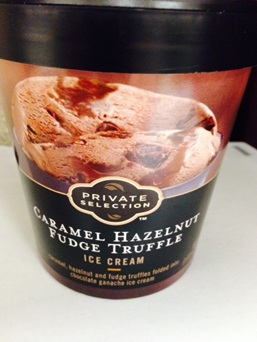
RECALLED – Chocolate Hazelnut Mascarpone Ice cream and Caramel Hazelnut Fudge Truffle Ice cream

April 26, 2014 – Product Recall – Two Private Selection Ice Cream Flavors Recalled for Undeclared Allergen.